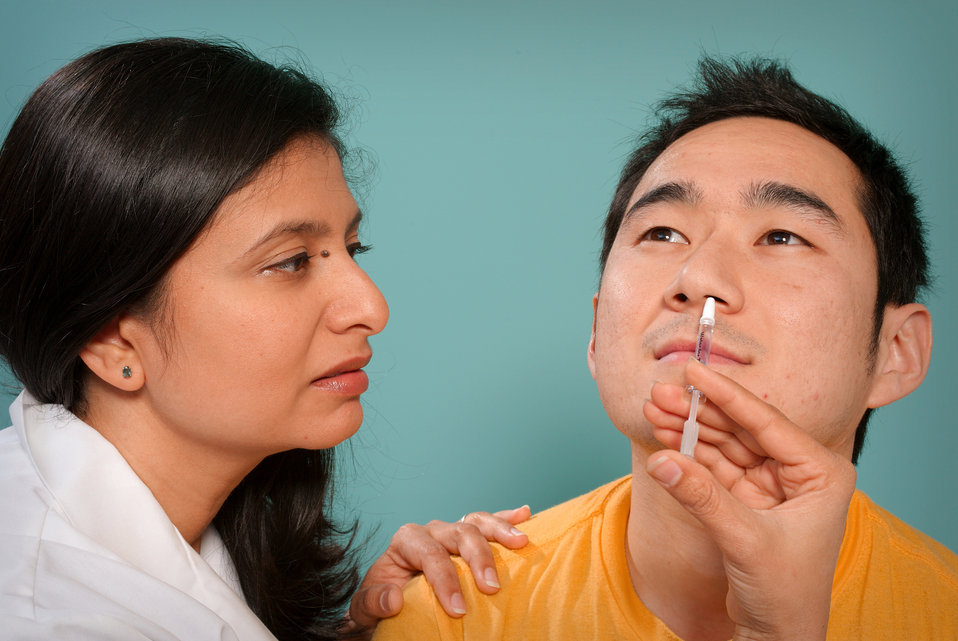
This 2009 image depicts a healthcare practitioner as she was administering the H1N1 live attenuated intranasal vaccine (LAIV) to an Asian man. Using a small syringe, she was delivering the vaccine mist into the man's left nostril.